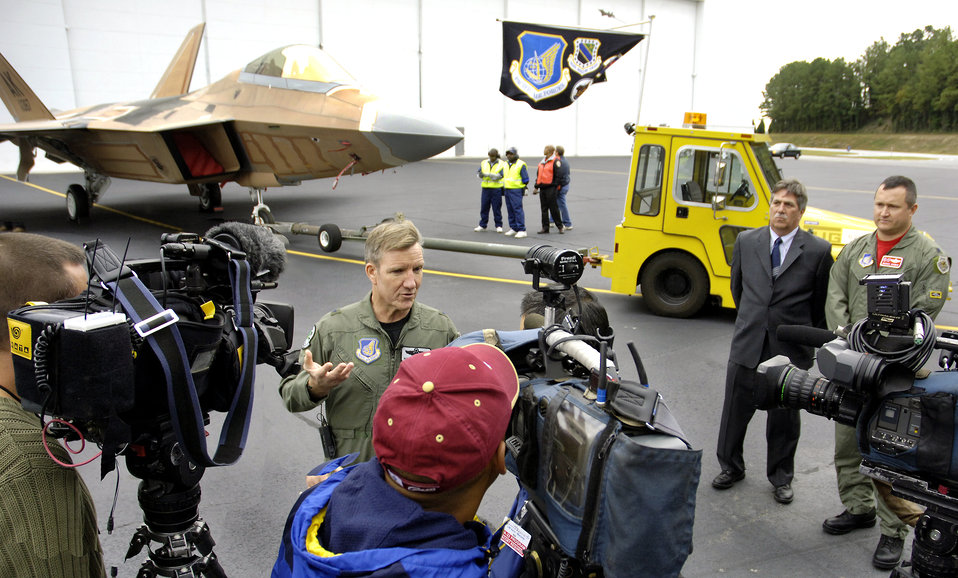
First Pacific F-22 rolls out

Brig. Gen. Herbert Carlisle, commander of the 3rd Wing at Elmendorf Air Force Base, Alaska, is interviewed after the roll-out of the Pacific's first combat ready F-22, destined for Elmendorf AFB. The F-22 dominates any adversary through unmatched performance achieved through stealth, supercruise speed, agility, precision and a complete view of the battlespace achieved with the advanced sensor suite embedded in the aircraft.